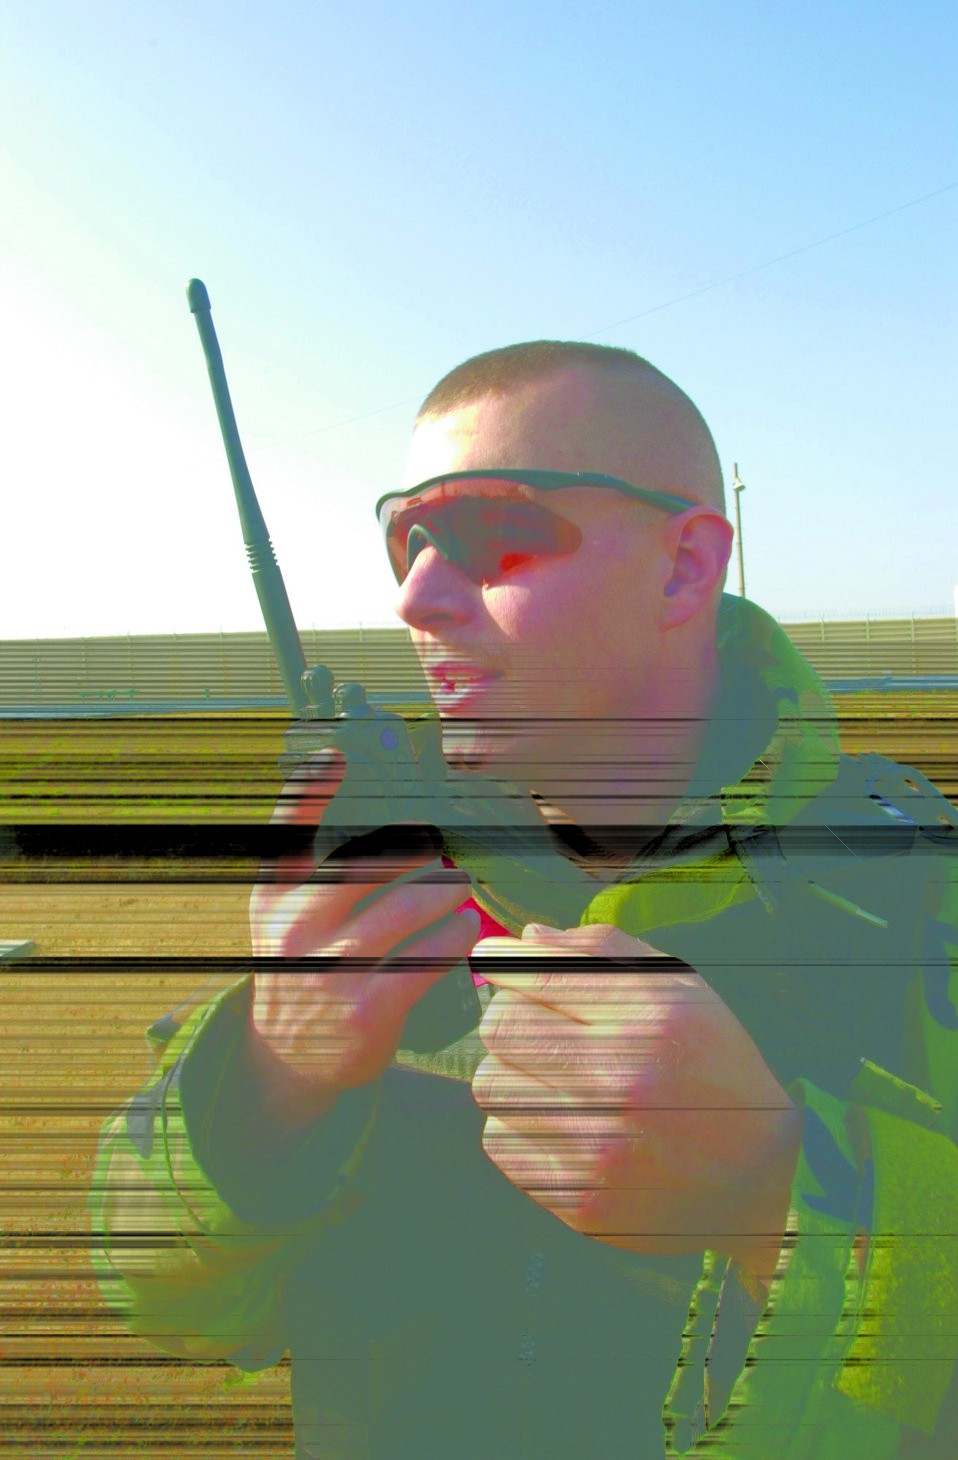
Kunsan Airmen destroy Korean War bazooka round

KUNSAN AIR BASE, South Korea -- Staff Sgt. John McCoy calls the safety status of an explosive here Dec. 16. He is assigned to the 8th Civil Engineer Squadron explosive ordnance disposal flight.